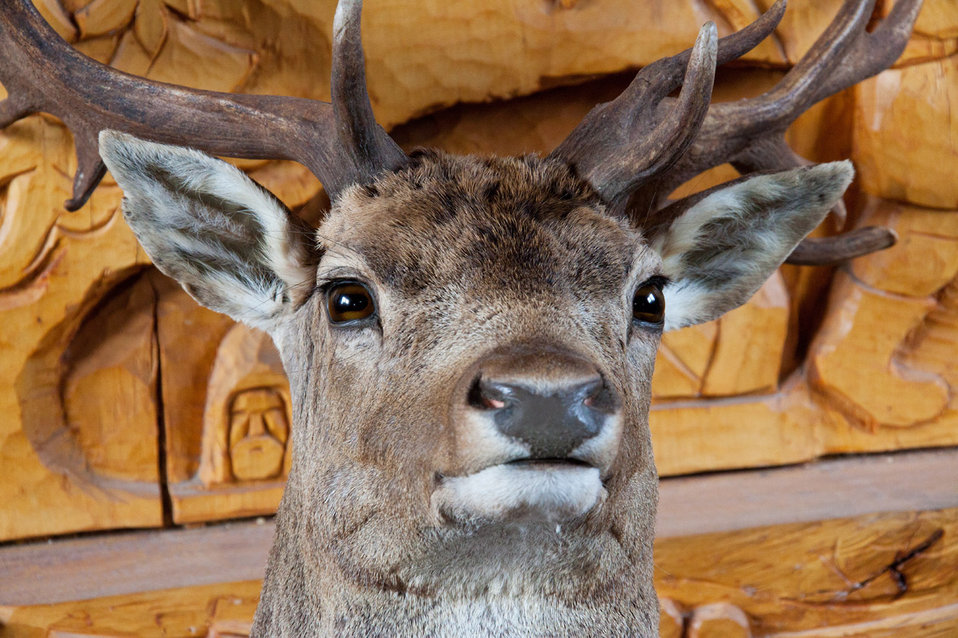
Stuffed deer head hanging on wall.